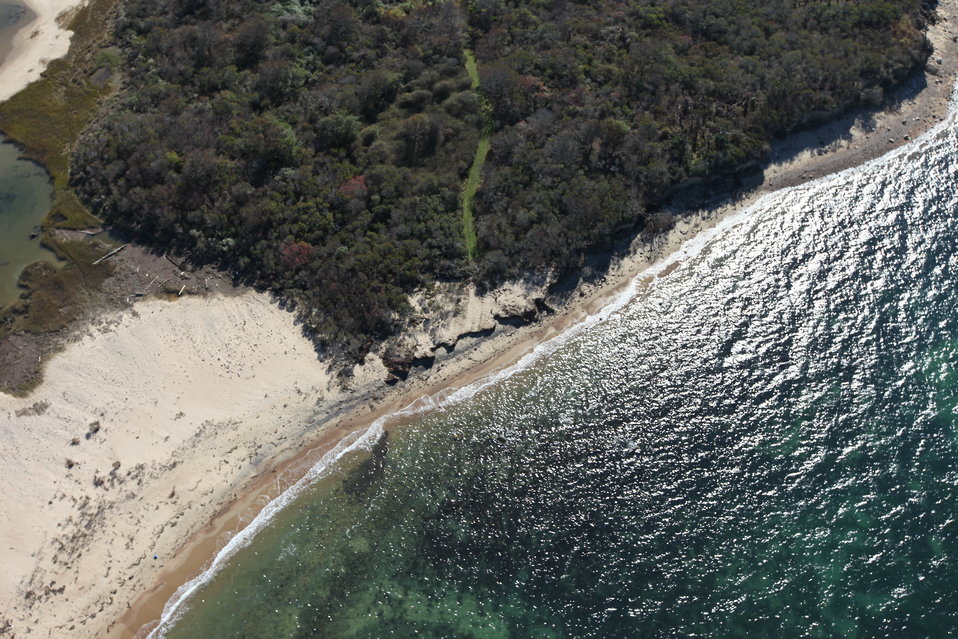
Damage to access road at Block Island National Wildlife Refuge (RI)

Damage to access road as a result of storm Sandy at the Block Island National Wildlife Refuge in Rhode Island.